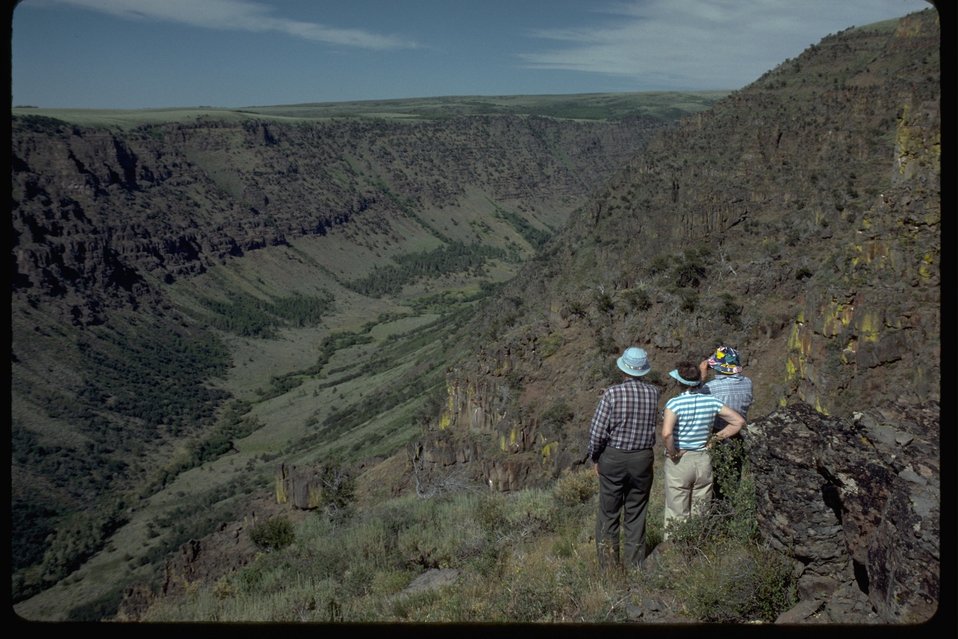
Sight seeing at the Little Blitzen Gorge in the Rooster Comb area of the Steens.